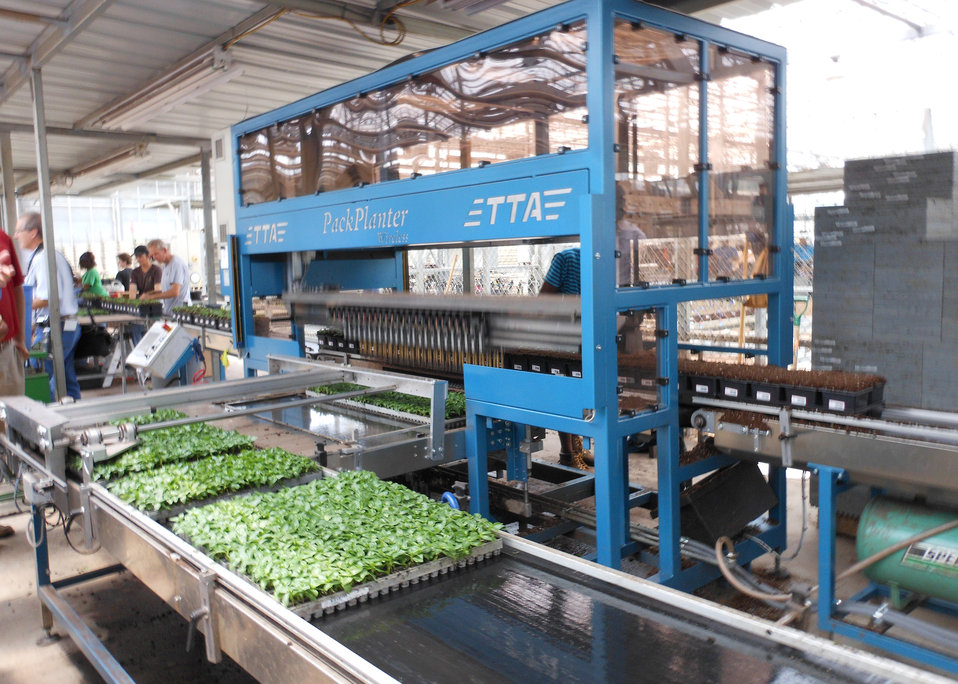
This is the TTA PackPlanter wireless transplanting machine at Metrolina Greenhouses in Huntersville, NC on Monday, June 25, 2012. The TTA PackPlanter Wireless can be equipped with 12 to 48 plant grippers, which results in capacities ranging from 10,000 up to 50,000 plants being transplanted per hour. Metrolina Greenhouses is a family-owned, wholesale plant and services company that started business in April 1972. It is the largest single-site heated greenhouse in the US at 162 acres under roof and approximately 30 acres of outdoor growing space.